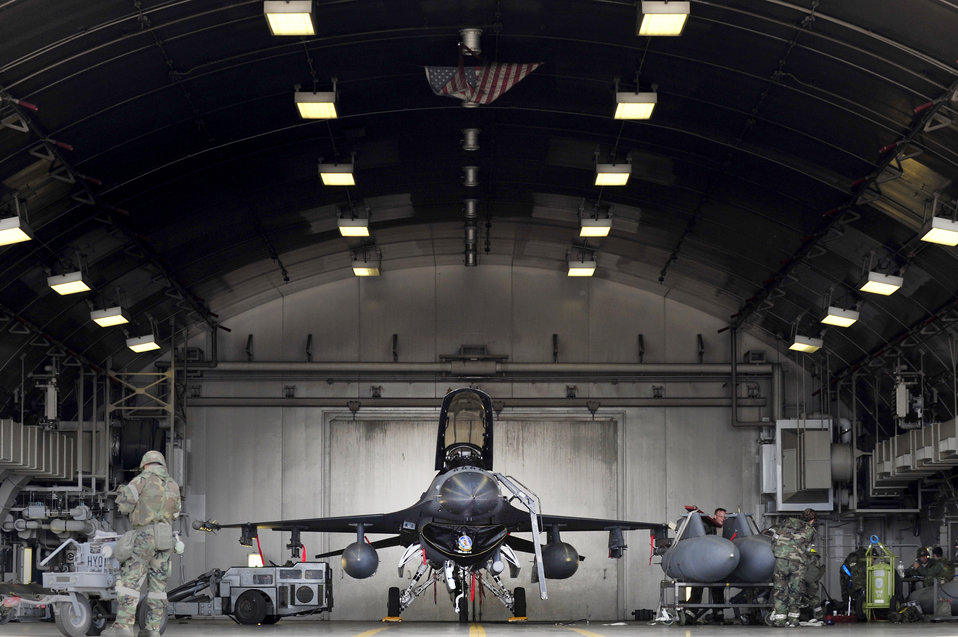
Exercise at Misawa

Airmen from the 14th Aircraft Maintenance Unit prepare an F-16 Fighting Falcon for flight June 22, 2011, during an exercise at Misawa Air Base, Japan.